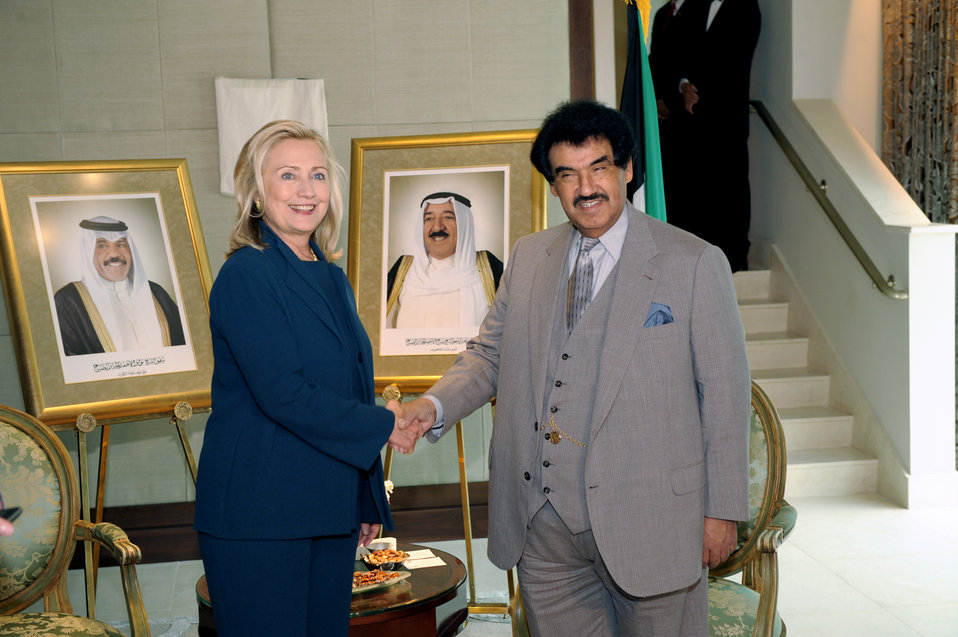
Secretary Clinton Shakes Hands With Kuwaiti Prime Minister Nasser al Sabah

U.S. Secretary of State Hillary Rodham Clinton shakes hands with Kuwaiti Prime Minister Nasser al Sabah after their bilateral meeting in Washington, D.C., in September 29, 2011.